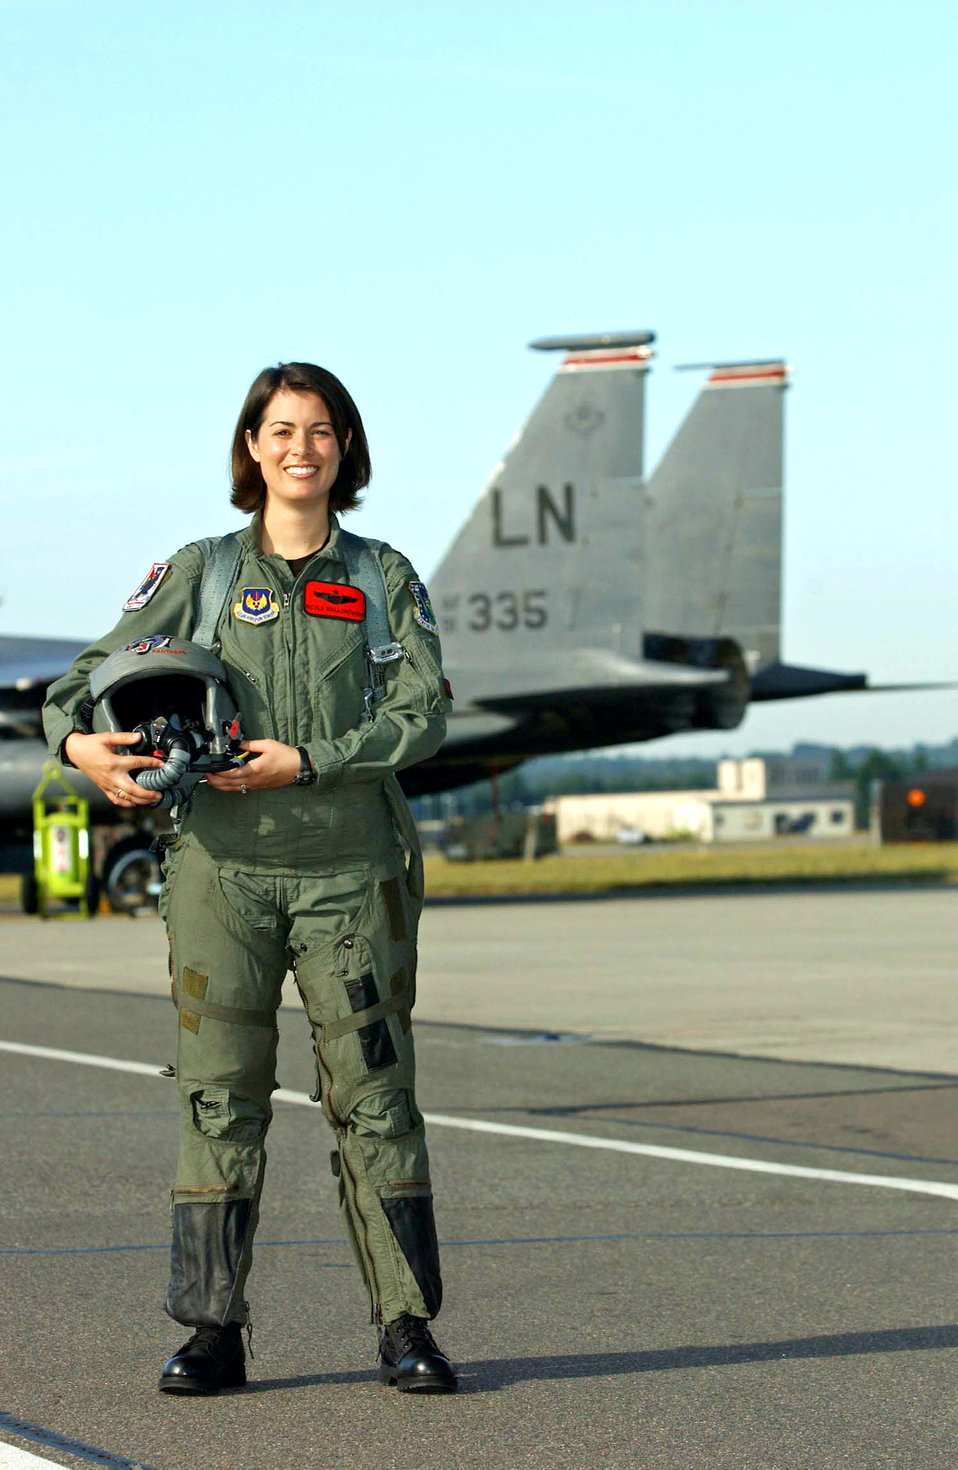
Becoming Thunderbird is dream come true for Nevada native

ROYAL AIR FORCE LAKENHEATH, England -- Capt. Nicole Malachowski has been selected to fly for the U.S. Air Force Air Demonstration Squadron